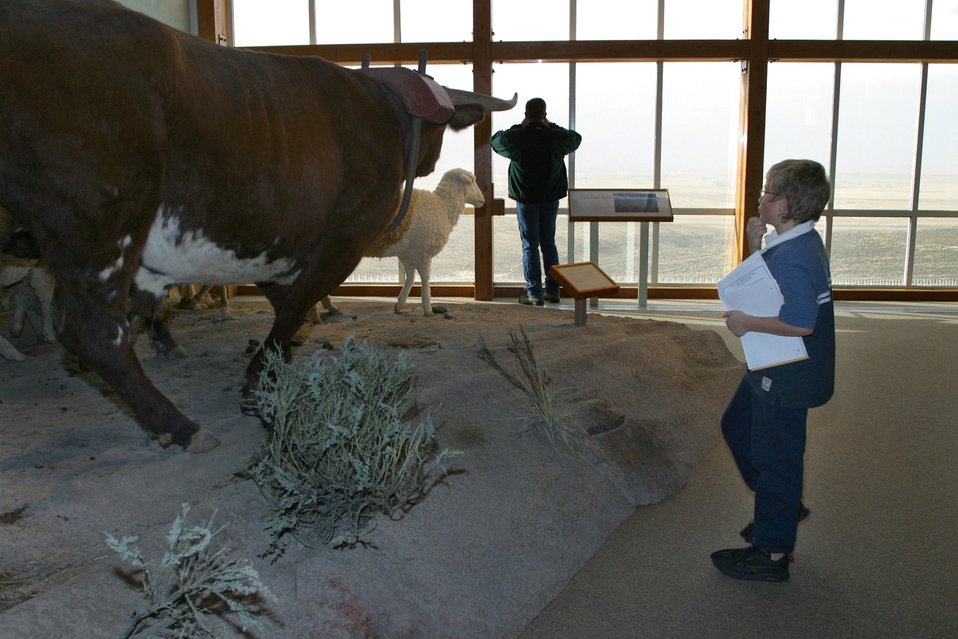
Hundreds of school children visit the National Historic Oregon Trail Interpretive Center every year.